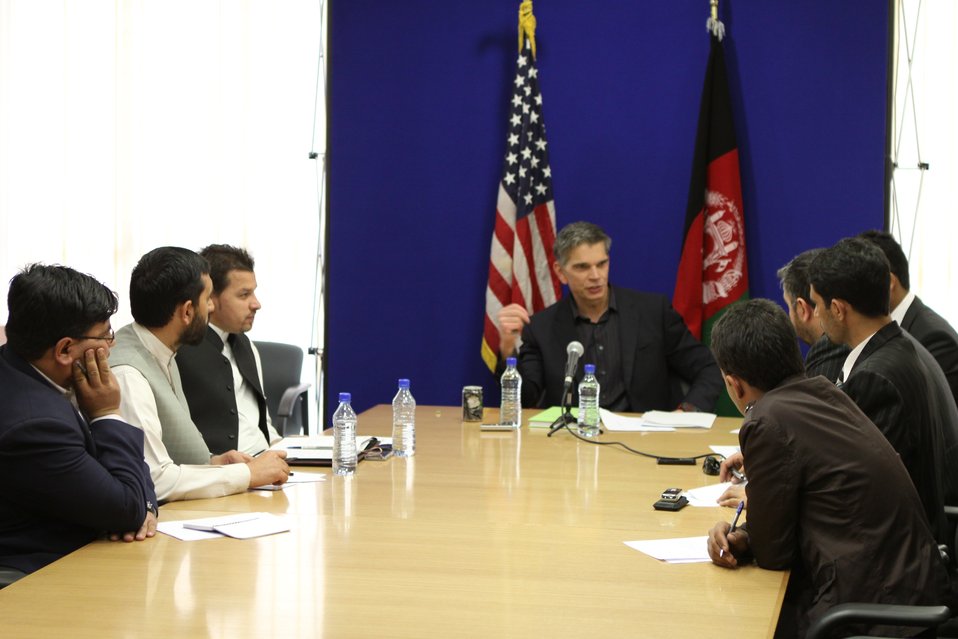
USAID Mission Director Earl Gast Conducts a Media Roundtable with Afghan Media, March 17, 2011